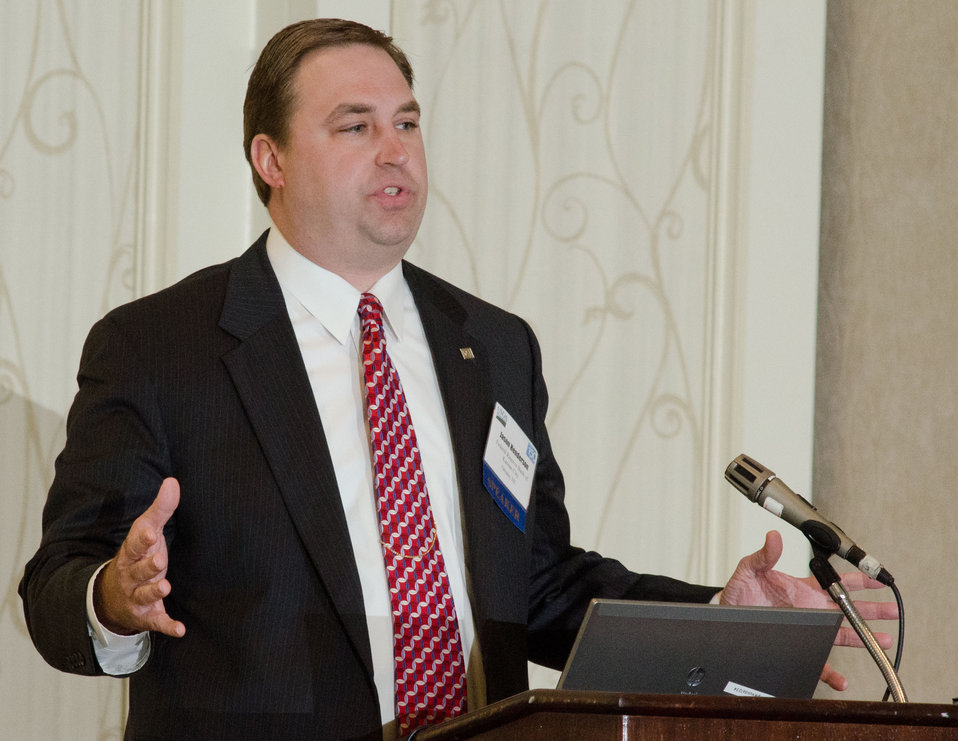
Federal Reserve Bank of Kansas, City Omaha Branch Executive Vice President Jason Henderson, responds to a question, during “The Farm Income Outlook for 2012” session of the Food Prices & Farm Income Track, at the 2012 Agricultural Outlook Forum, “Moving Agriculture Forward, Growing, Innovating and Celebrating 150 Years.” held at the Crystal Gateway Marriott Hotel, Arlington, Virginia, on Friday, February 24, 2012. The session focused on general measures of the financial well being of the farm economy, including USDA’s official outlook for farm income, the distribution of income across farm households, and the competitiveness of the rural economy.